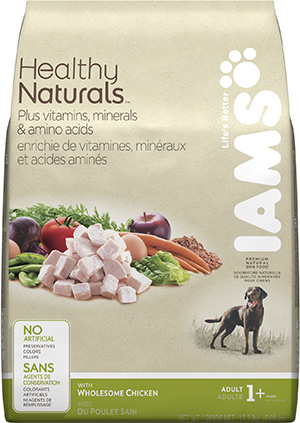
RECALLED – Dog and Cat foods - Dry

August 14, 2013 – Product Recall – P&G Voluntarily Recalls Limited Quantity of Dry Pet Food Due to Possible Health Risk.